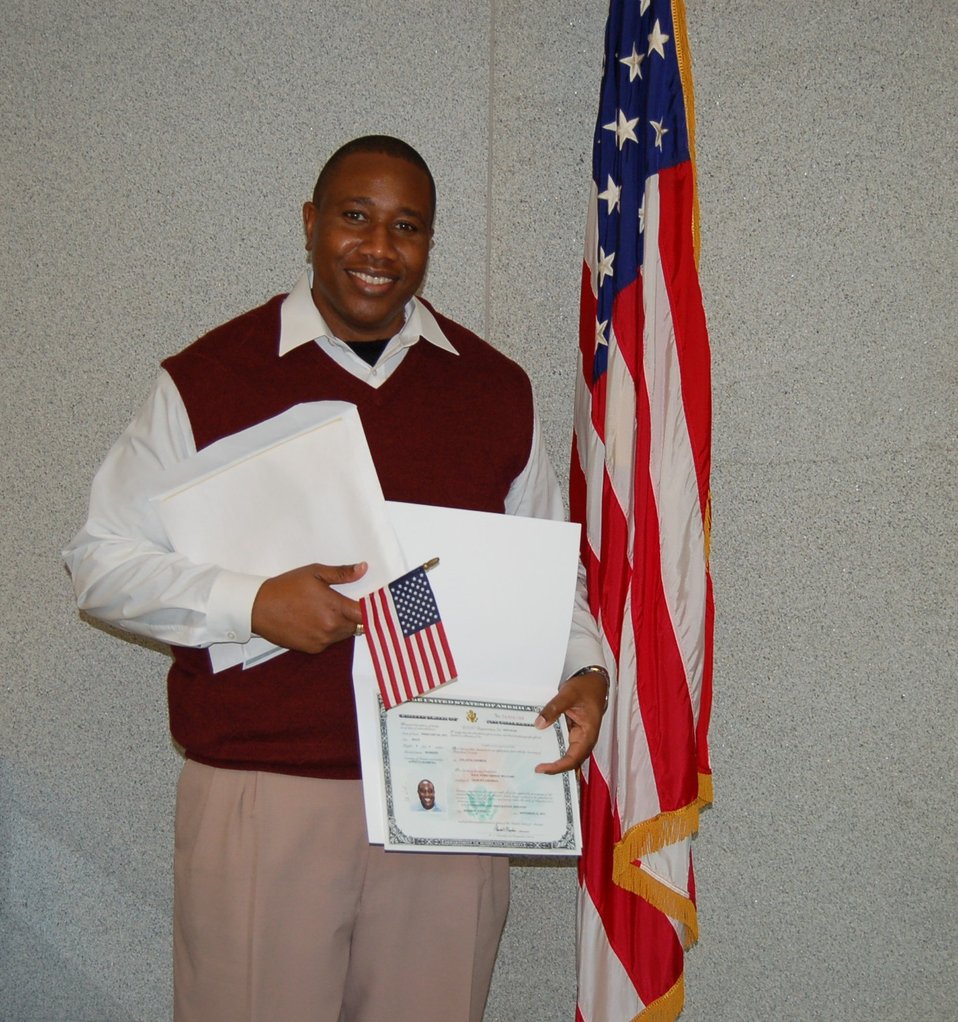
New Citizens